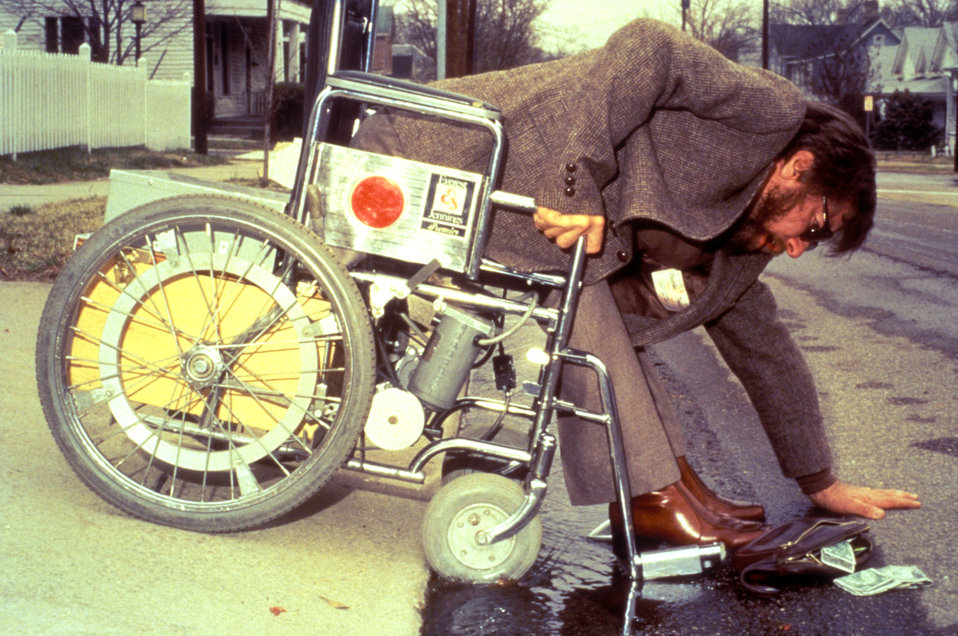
This 1984 photograph depicted a wheelchair-bound man, who while crossing a roadway, had dropped his wallet, which he was attempting to pick up, as well as its dislodged contents. This mobility-challenged man was seen experiencing much difficulty in the process, primarily because of the drop-off between the sidewalk, and the lower level of the roadway. Note that the wheelchair footrests had jammed against the asphalt road, while the rear wheels were still atop the walkway. Chances were, the man was jarred while negotiating the drop-off, and lost control of his belongings. This is why it's so important to take into account these types of scenarios involving the mobility-challenged when designing all publicly-accessible environmental elements such as walkways, and how they interface with busy, dangerous roadways.